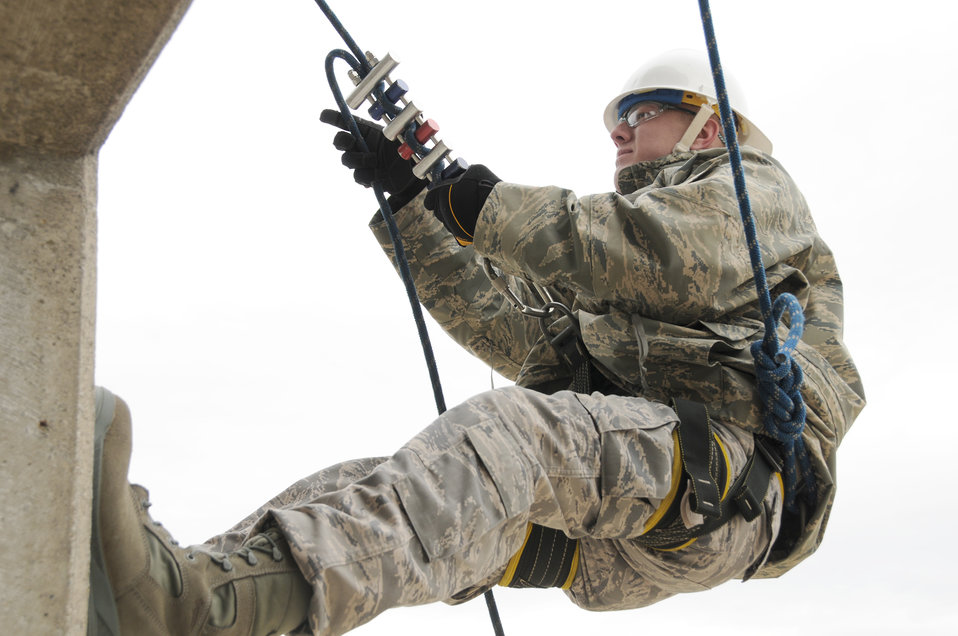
Firefighters on a training mission

Firefighters rappel down the side of a training facility Oct. 5, 2010, at the Toledo Fire and Rescue Department Training Academy in Ohio. Firefighters from the Ohio Air National Guard's 180th Fighter Wing are participating in six days of training.